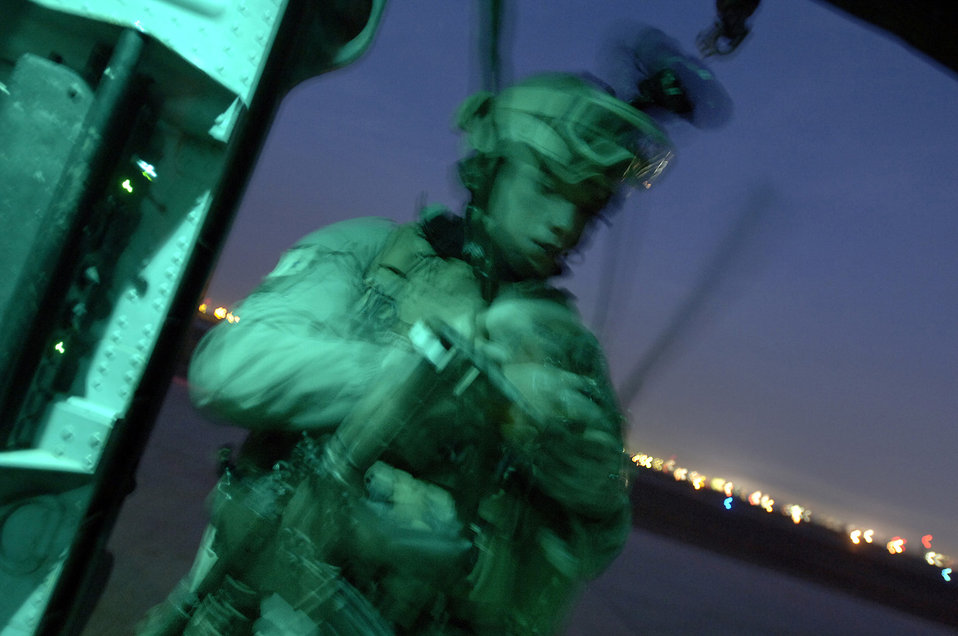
Pararescue Airmen mission ready for search, rescue

Pararescue jumper Staff Sgt. Eric Kelly prepares his equipment for a combat search and rescue rehearsal mission Feb. 24 outside Balad Air Base, Iraq. He will practice hoisting, repelling and evasive maneuvering techniques to stay proficient. Sergeant Kelly is assigned to the 64th Expeditionary Rescue Squadron.